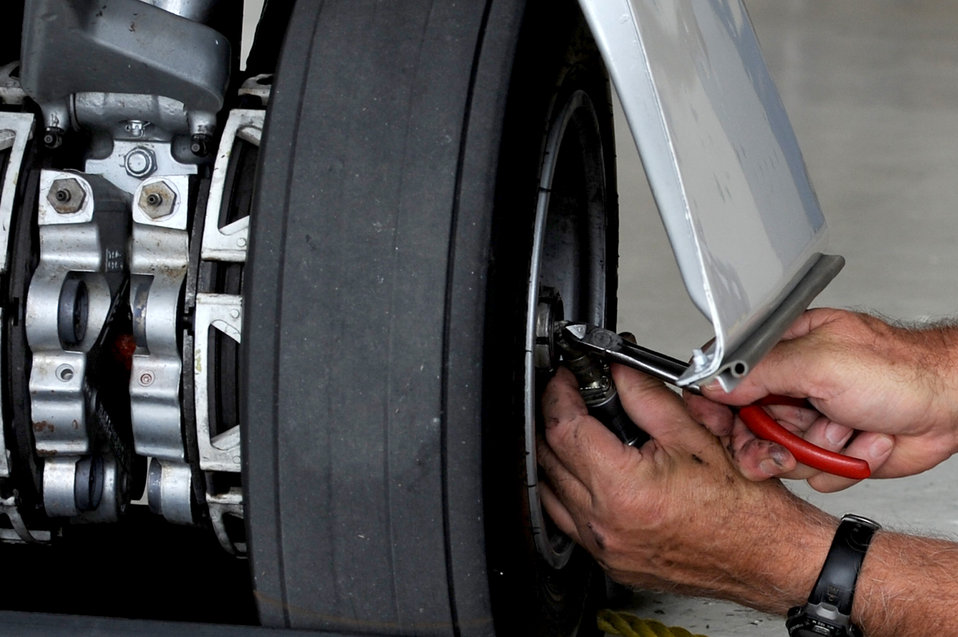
C-21 phase inspection

A worker checks landing gear on a C-21 during a phase inspection Sept. 15, 2010, at Scott Air Force Base, Ill. The phase inspections are done on aircraft after they reach flying milestones to ensure the aircraft remain in top condition.